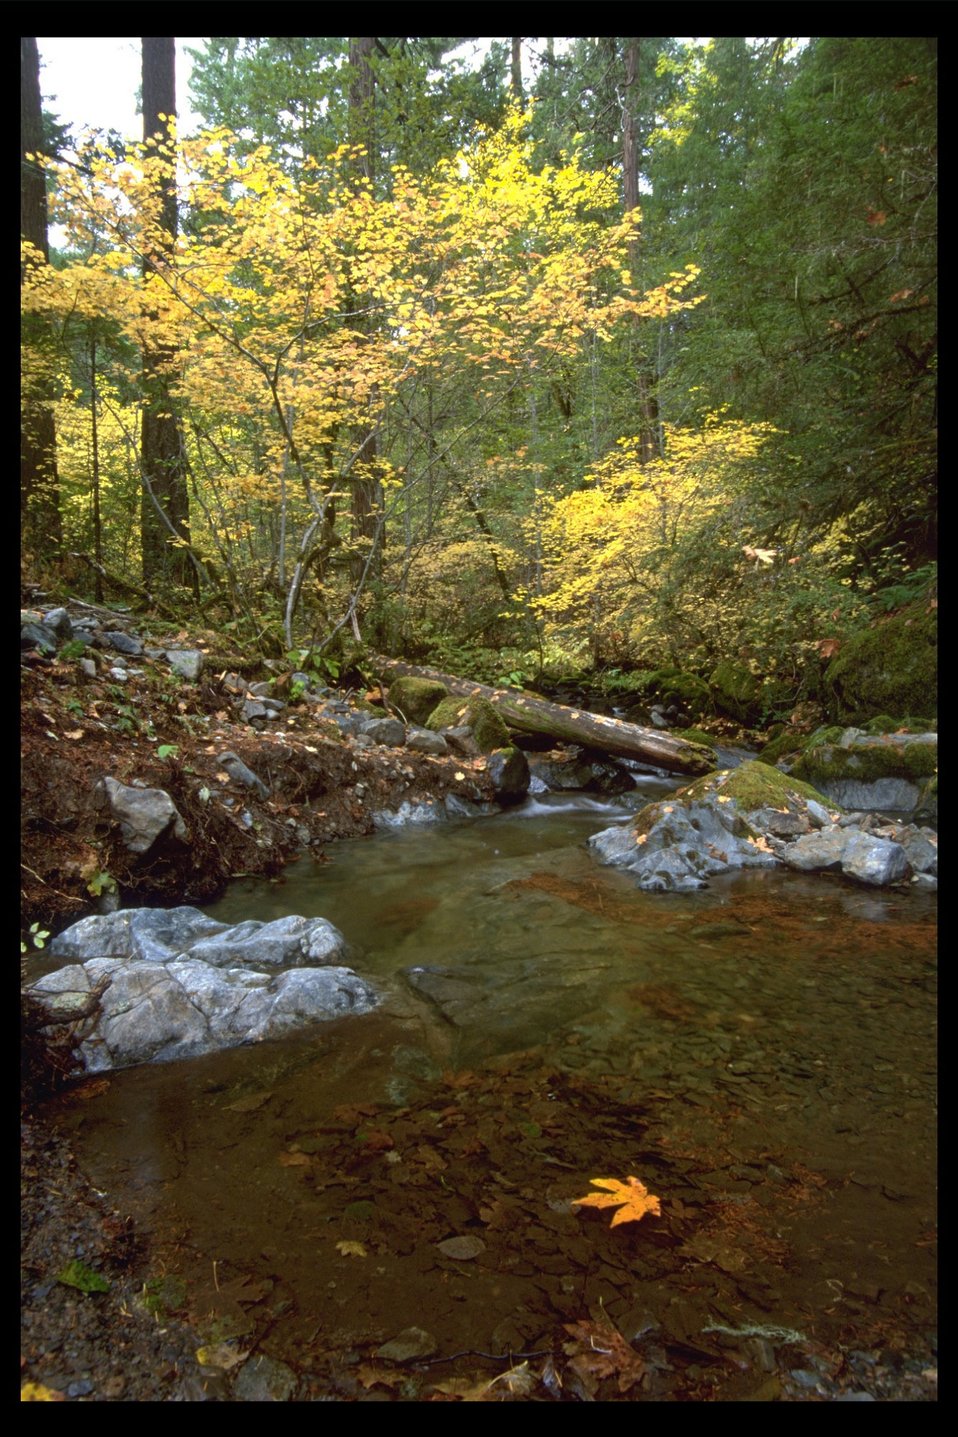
Ditch Creek, east of Wimer.